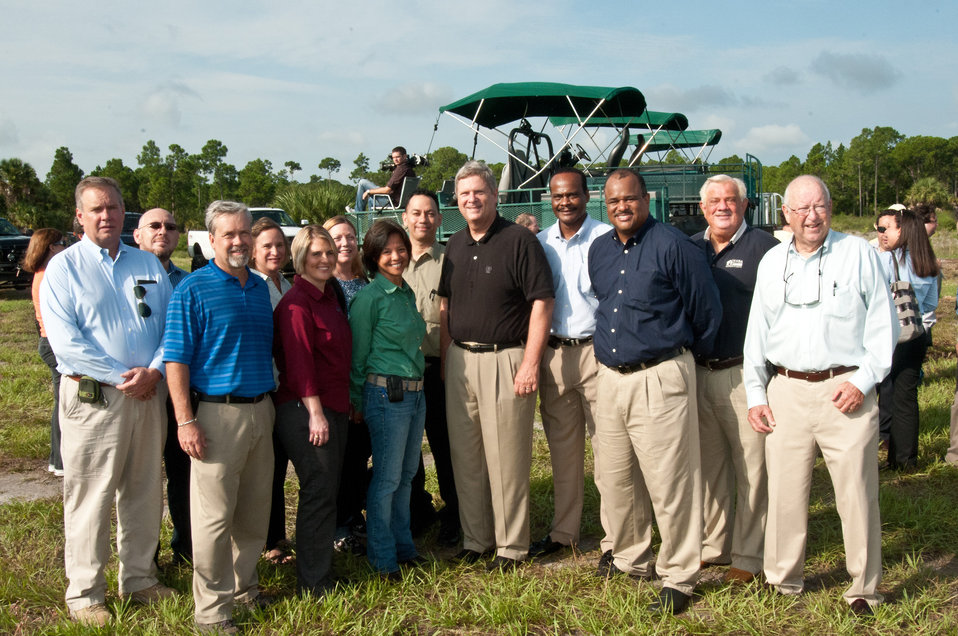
U.S. Department of Agriculture (USDA) Secretary Tom Vilsack with USDA Florida personnel, shortly before a tour, using swamp buggies (background), at the Winding Waters Natural Area, FL, on Thursday, August 8, 2011.